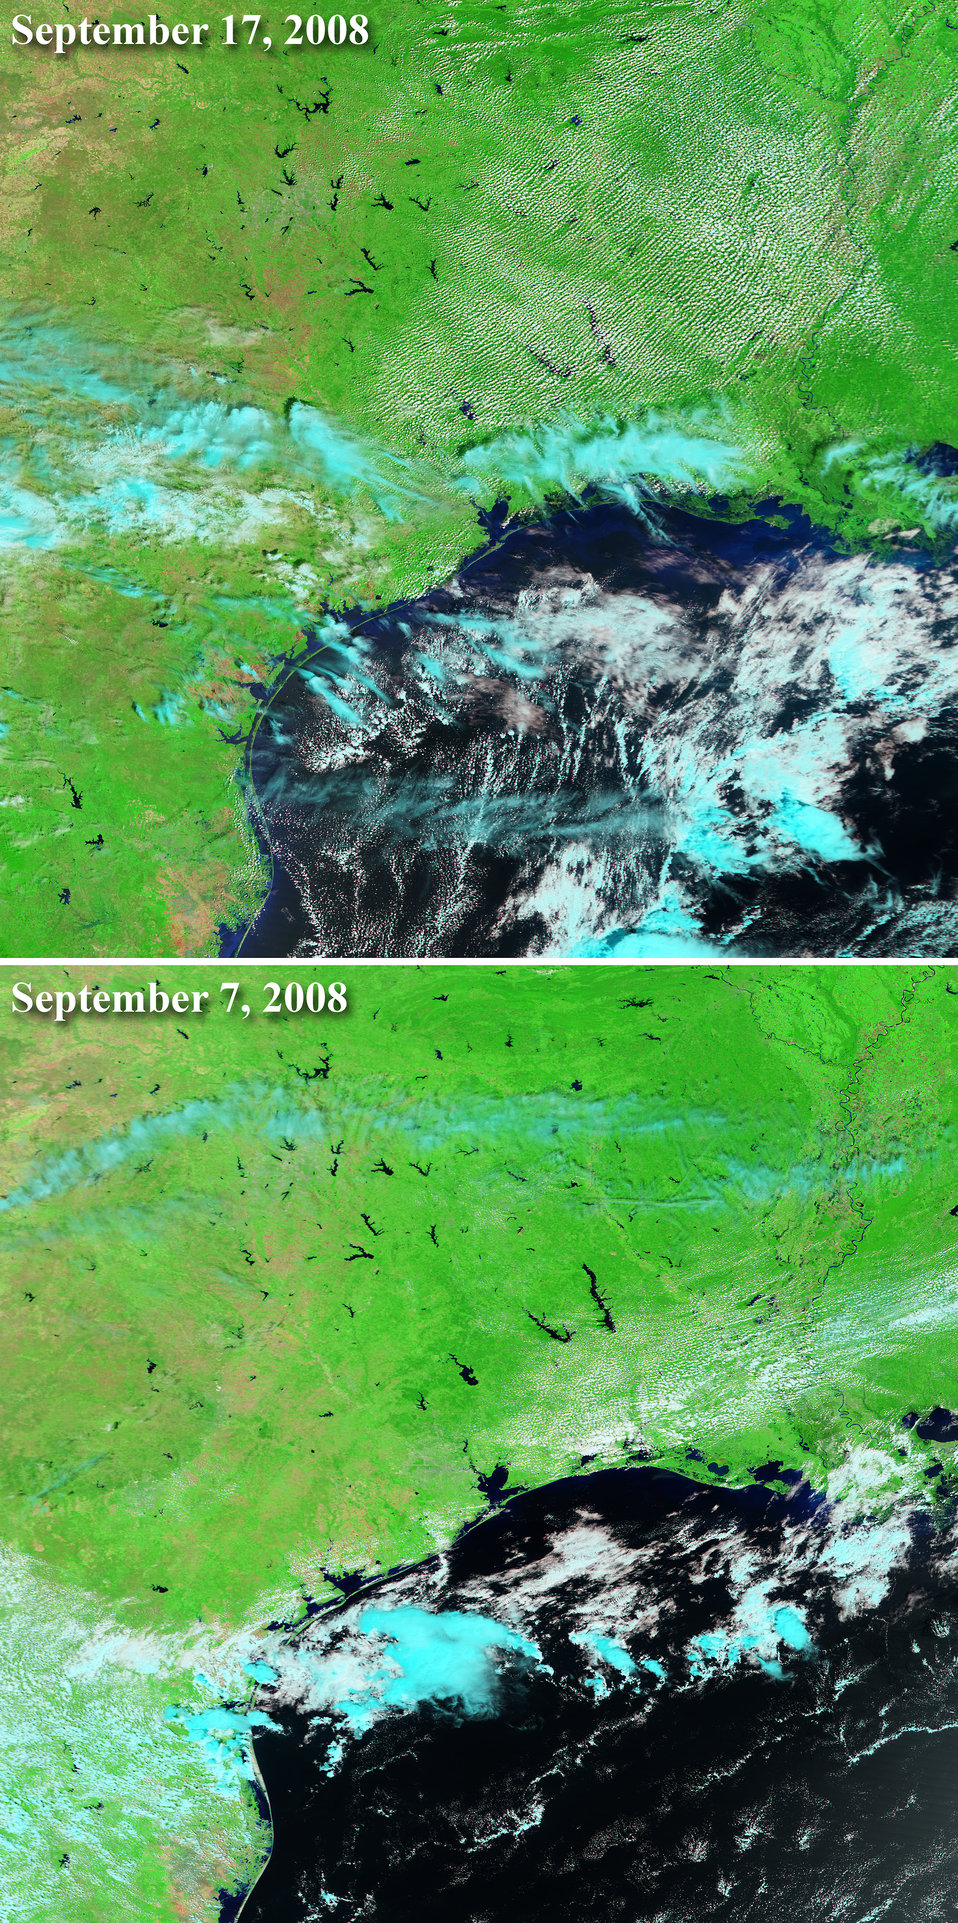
Sept. 7 - 17, 2008: NASA Satellites Provide Clear Picture of Hurricane Ike's Inland FloodingFour days after Hurricane Ike swept ashore over the Gulf Coast of the United States, the clouds cleared enough for the Moderate Resolution Imaging Spectroradiometer (MODIS) on NASA's Terra satellite to view the storm's impact.